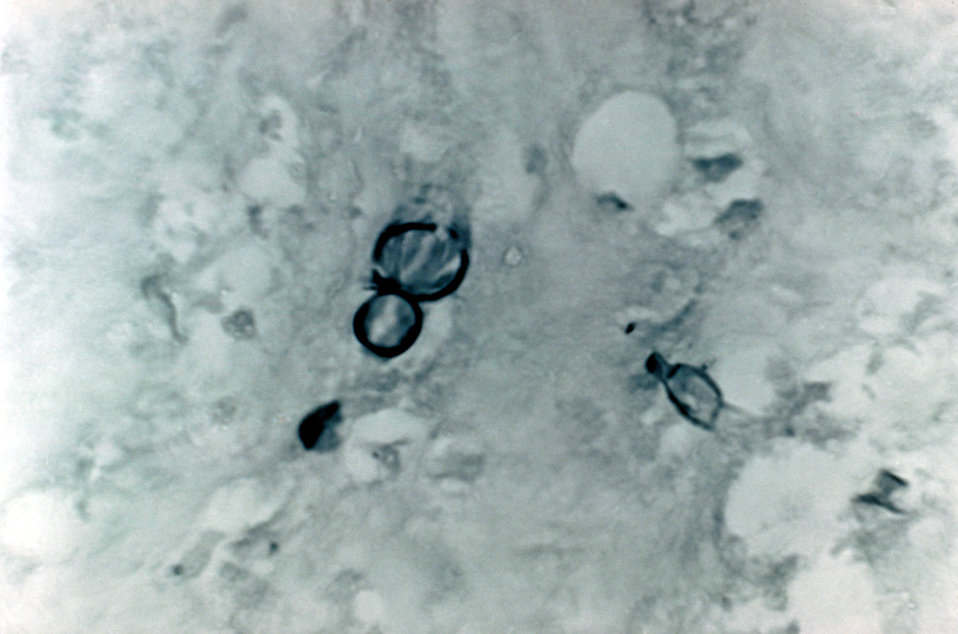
Note the histopathologic changes seen in blastomycosis due to Blastomyces dermatitidis using methenamine silver stain.